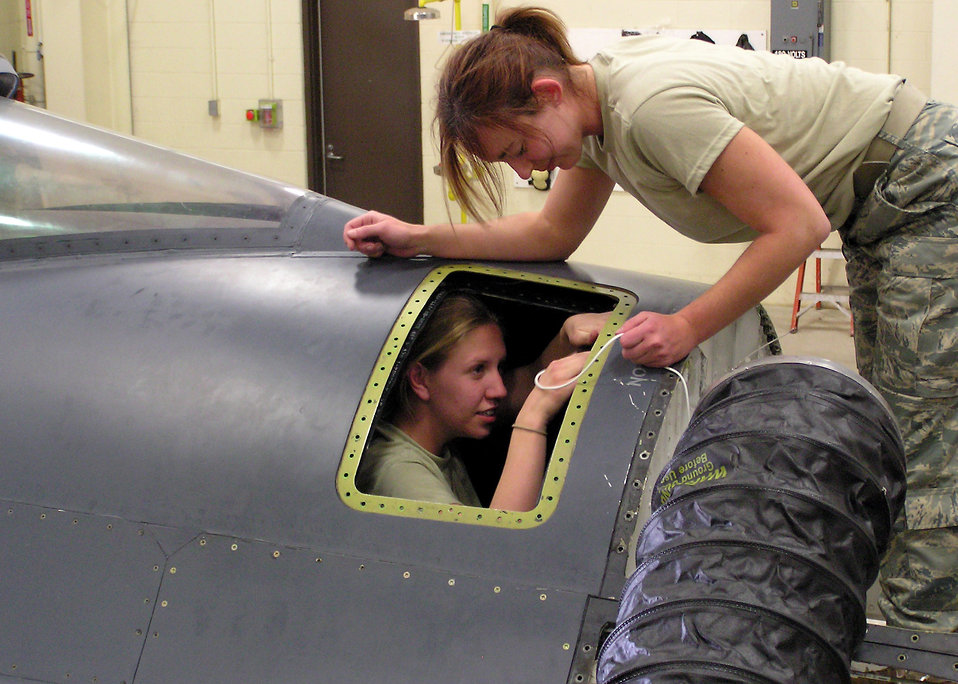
Getting to the heart of the problem

Staff Sgt. Deidra Braun and Tech. Sgt. Annmarie Schneider work to resolve a fuel cell problem that was found during routine maintenance on an F-16 Fighting Falcon. They are fuel system maintenance technicians with the Wisconsin Air National Guard's 115th Fighter Wing at Truax Field in Madison.